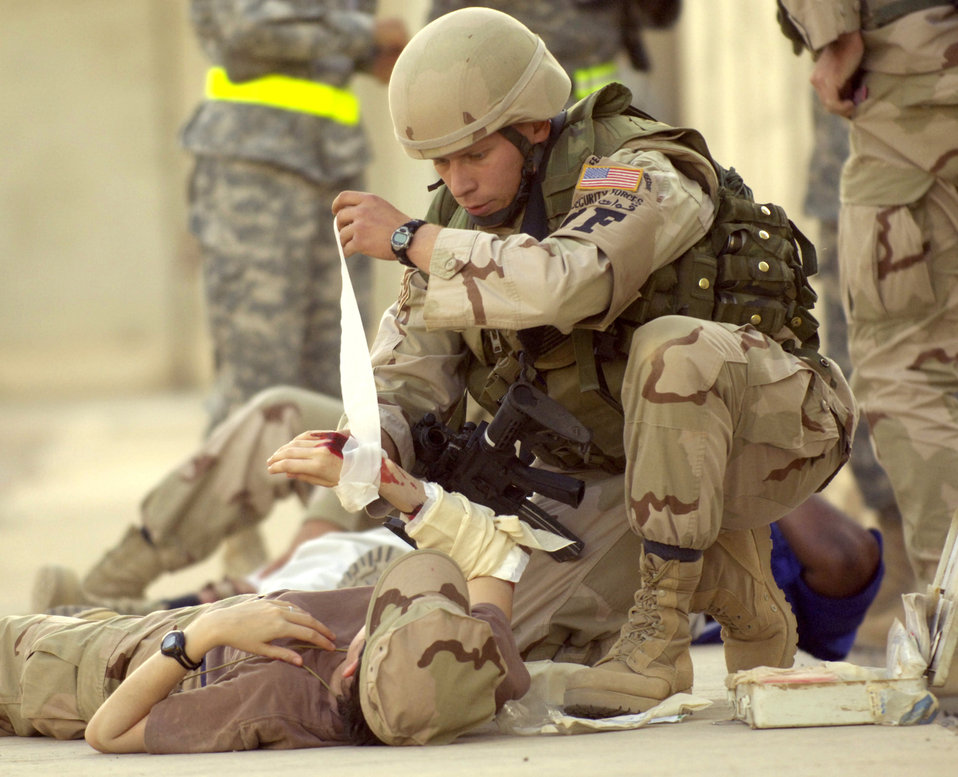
Training now pays off later

Staff Sgt. Peter Wooden treats Staff Sgt. Heather Fitzpatrick during a simulated mortar attack Oct. 5 at Balad Air Base, Iraq. Sergeant Wooden is a Tennessee Air National Guardsman from the McGee-Tyson Guard Base in Knoxville; Sergeant Fitzpatrick is with the 99th Communications Squadron at Nellis Air Force Base, Nev.